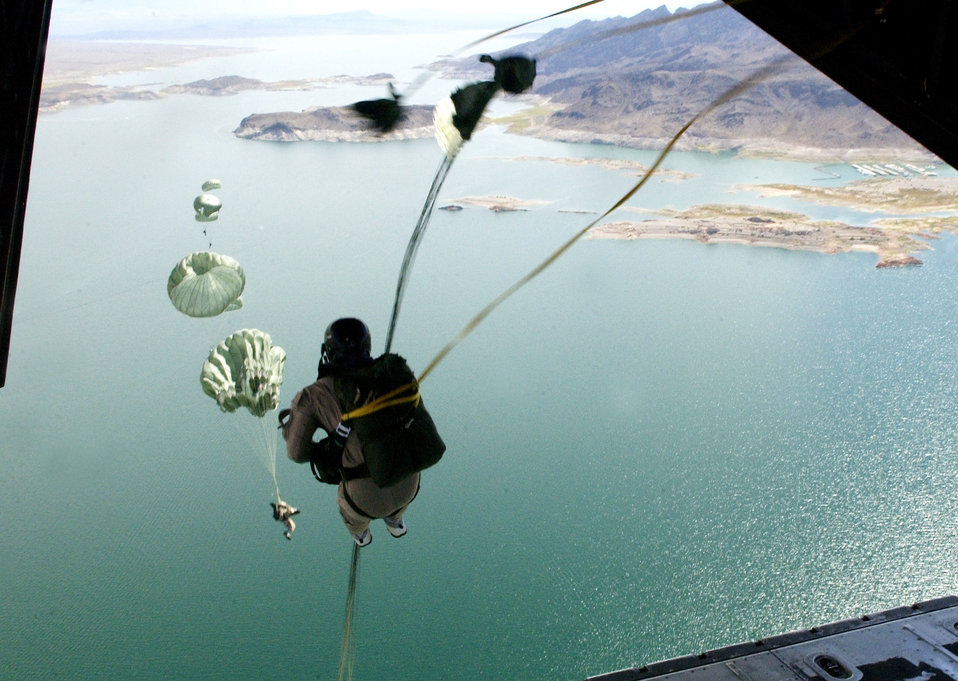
Red Flag 06-02

58th Rescue Squadron pararescuemen and combat controllers assigned to the 414th Combat Training Squadron, Nellis Air Force Base, Nev., jump out of a C-130J Hercules Sept. 1, 2006, over Lake Mead in support of Red Flag Exercise 06-2.